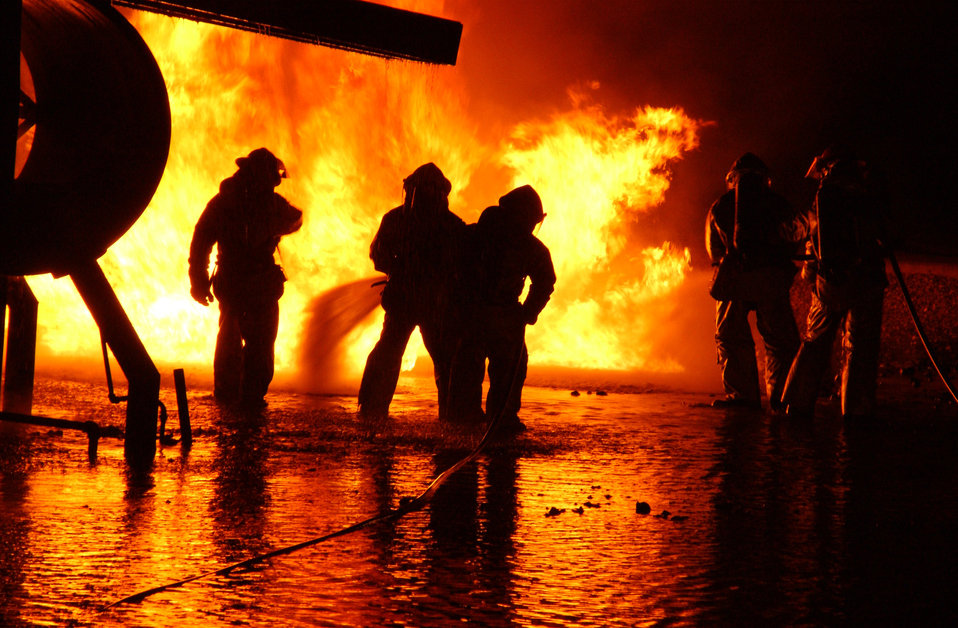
Feeling hot, hot, hot

GOODFELLOW AIR FORCE BASE, Texas -- Department of Defense Fire Academy students extinguish a jet fuel fire on a large frame aircraft trainer here recently. The 68-day course challenges students both physically and mentally. Goodfellow's Firefighter Apprentice Course, ranked No. 1 in the world for fire training, trains about 2,000 students a year including allied forces.